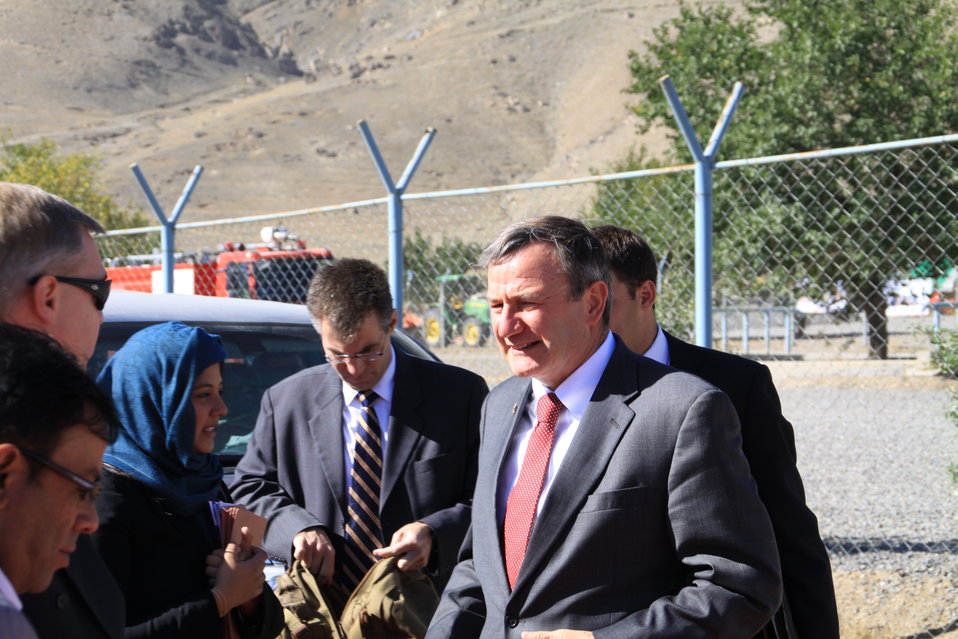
AVIPA Plus Wheat Seed Distribution 101005

US Ambassador Karl Eikenberry and USAID Acting Mission Director Kevin Brownawell joined the Minister of Agriculture, Irrigation and Livestock, H.E. Minister Mohammed Rahimi in signing a Memorandum of Understanding and distributing vouchers to area farmers for wheat and fertilizer.